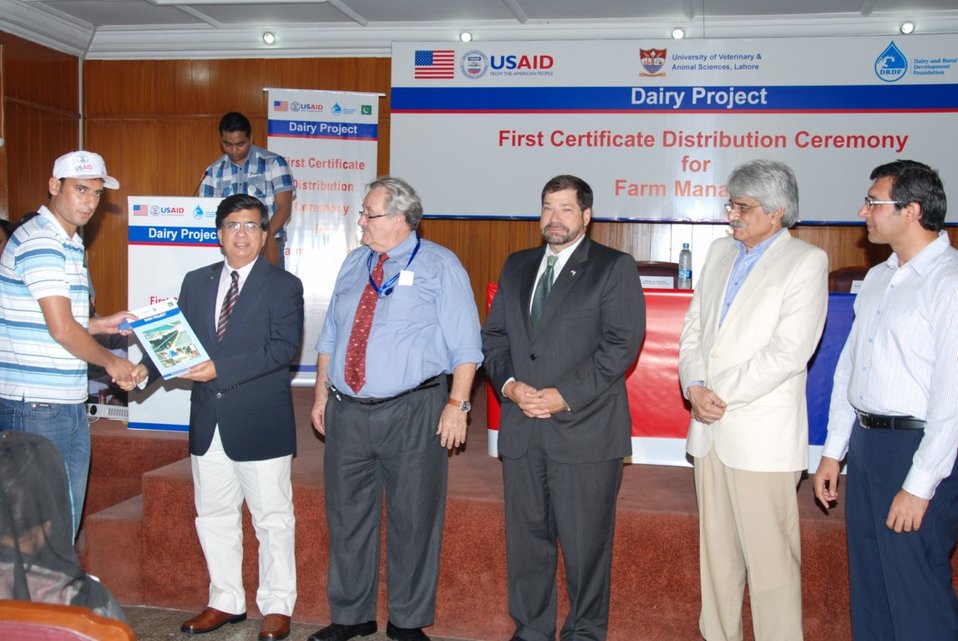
2 - VC UVAS Mr. Tallat Naseer Pasha awarding certificate to USAID Dairy Project-trained dairy farm managers